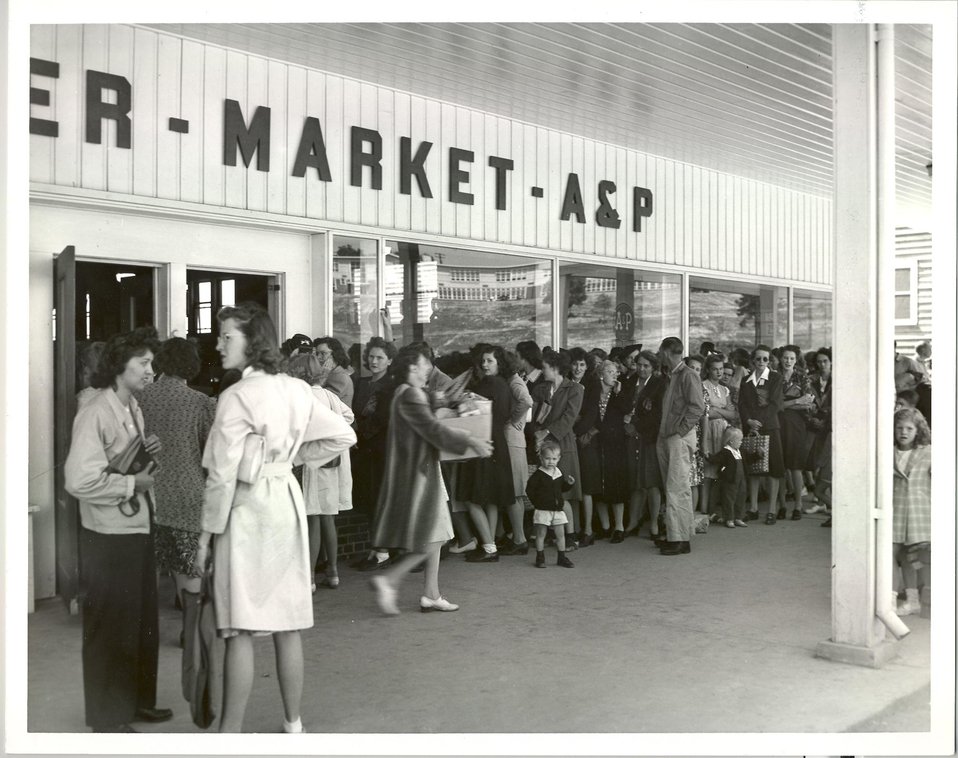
Line of People Waiting Outside A&P